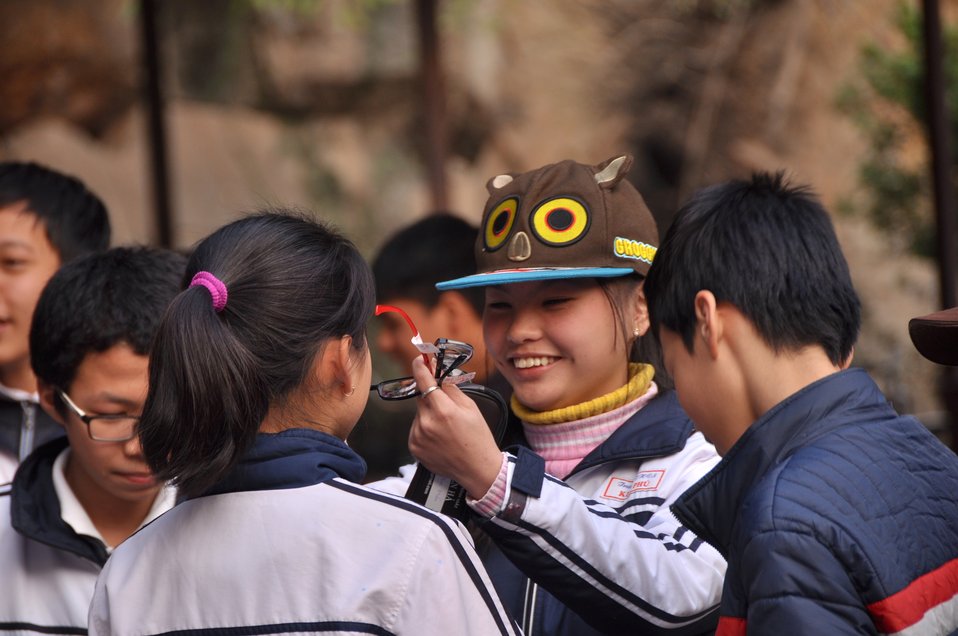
USAID supports distribution of eyeglasses to pupils and teachers in Quoc Oai, Hanoi.

Kieu Phu Junior Secondary School, Quoc Hoai, Hanoi, December 23, 2013.